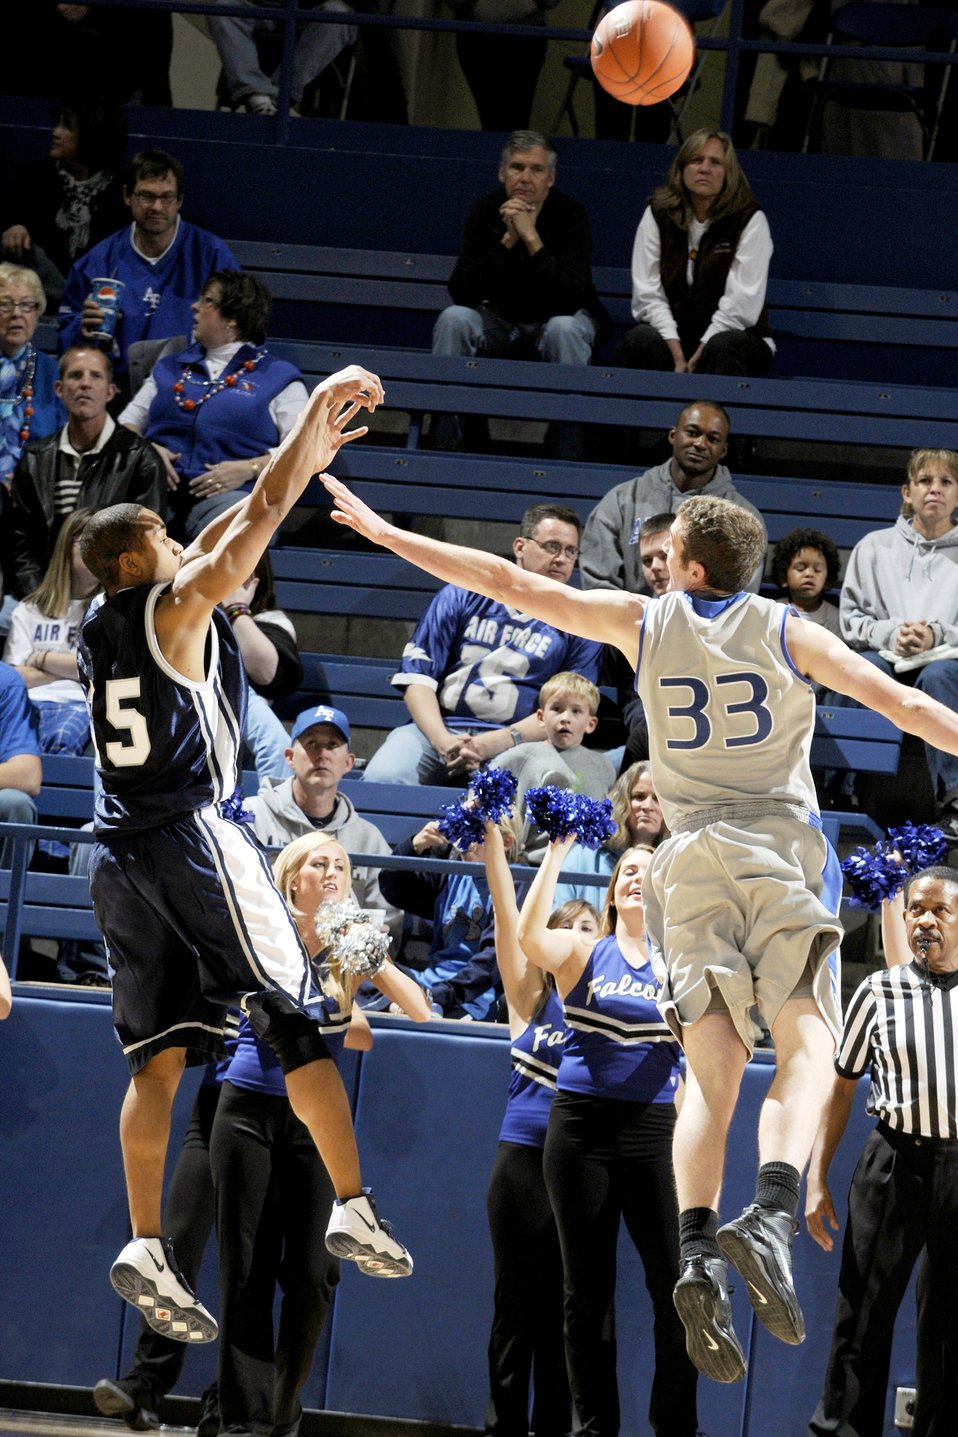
Falcons won 95-77

U.S. Air Force Academy, CO- Senior center Mike McLain tries to block a shot by Dickinson State's Nate Williams during the Reggie Minton Air Force Classic at Clune Arena. The Falcons won 95-77, but finished the tournament in 2nd place after a 70-46 loss to Northern Colorado in the championship game.